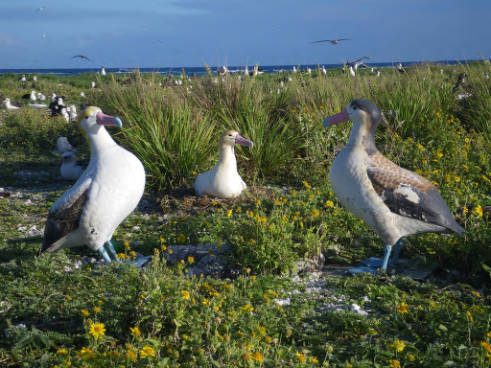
Male Shorttailed Albatross Incubating Egg